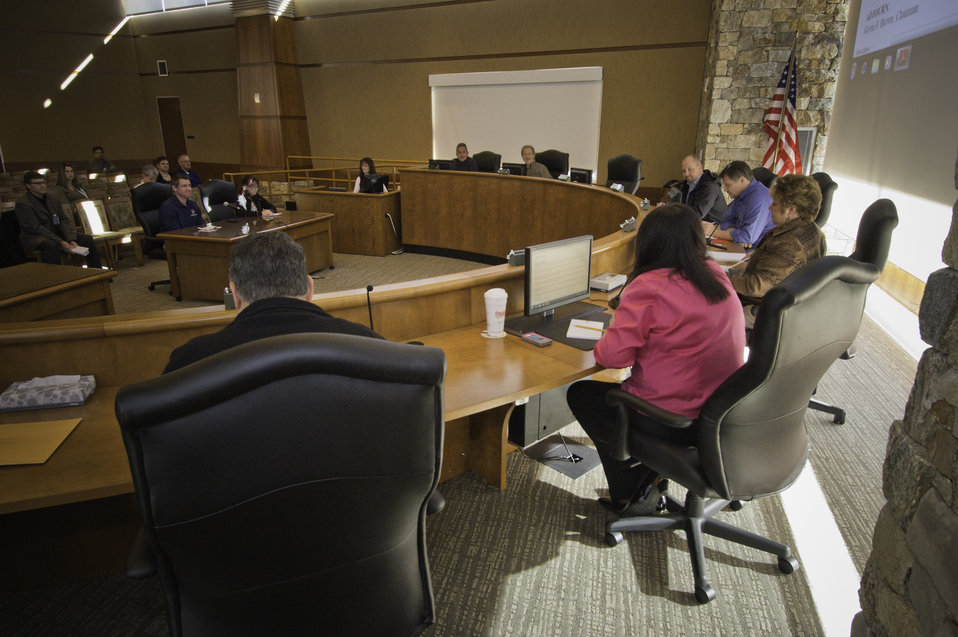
A Mohegan Tribal Council meeting is held at the Mohegan Tribe Community Center and Government Building in Uncasville, CT on Nov. 20, 2013. A U.S. Department of Agriculture (USDA) Rural Development (RD) Community Facility Loan was provided to the Mohegan Tribe for the construction of the Mohegan Tribe Community Center and Government Building in Uncasville, CT. USDA’s RD Community Facilities Programs makes and guarantees loans to develop essential community facilities in rural areas and towns of up to 20,000 in population. Loans and guarantees are available to public entities such as municipalities, counties, parishes, boroughs, and special-purpose districts, as well as to non-profit corporations and tribal governments. The 160,000 square foot building Center hosts an exhibit celebrating federal recognition, history of Mohegan Chiefs, a new Library and Archives space, new Arts and Crafts room, a new gymnasium, and a new community room to enjoy food and family. The Center will continue the Tribe’s plan for growth and meeting the needs of its members.